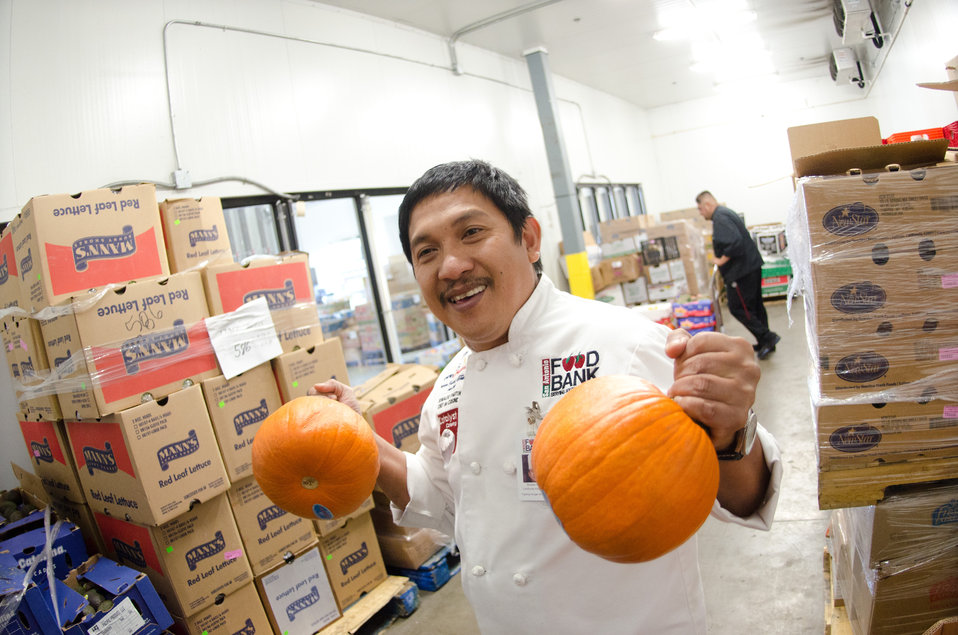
San Antonio Food Bank’s (SAFB) Community Kitchen Chef de Cusine Ronaldo Pautin holds up two high quality pumpkins in the SAFB Agency Store’s walk-in refrigerator, in San Antonio, TX, on Monday, October 31, 2011. The pumpkins are destined for a new recipe for the SAFB Community Kitchen. Produce in here is available to human service centers that distribute and/or prepare meals for the needy.
“We couldn’t do what we do without our partnership with USDA’” said President and CEO Eric Cooper. He continues, “We are privileged in partnering (with the USDA) to feeding kids, through the summer, with the Summer Food Service Program, and throughout the year, with the Child and Adult Care Feeding Program (CACFP). Then in our approach to feeding seniors, we partner with USDA in the Commodities Supplemental Food Program (CSFP), and the Senior Farmer’s Market (Nutrition) Program. …With this comprehensive approach we are really able to get the right food, at the right amount, at the right time, to needy families throughout our community – which allows us to feed the fifty-eight thousand we do, each week.”
SAFB serves 16 counties in Southwest Texas and states, “Nearly one out of every four children and one out of every five adults in Southwest Texas lives in poverty and has difficulty meeting basic nutritional needs.” According to SAFB, sixty-five percent of the people requesting emergency food have children. “Additionally, the senior citizens and those living on a fixed income generally have limited funds for a consistent grocery budget.”
San Antonio is the seventh largest city in the nation with surrounding farms and ranches near its rivers and water supplies. When available they provide fresh surplus produce. Other commodities come from the food industry and manufacturers. The major food brand companies that for various reasons have surplus commodities donate it to SAFB.
The United States Department of Agriculture donates commodities through programs such as The Emergency Food Assistance Program (TEFAP), while Texas farmers supply fresh produce to their Fresh Produce Program. Public donations come in the form of money, food, volunteer time, and advocacy.